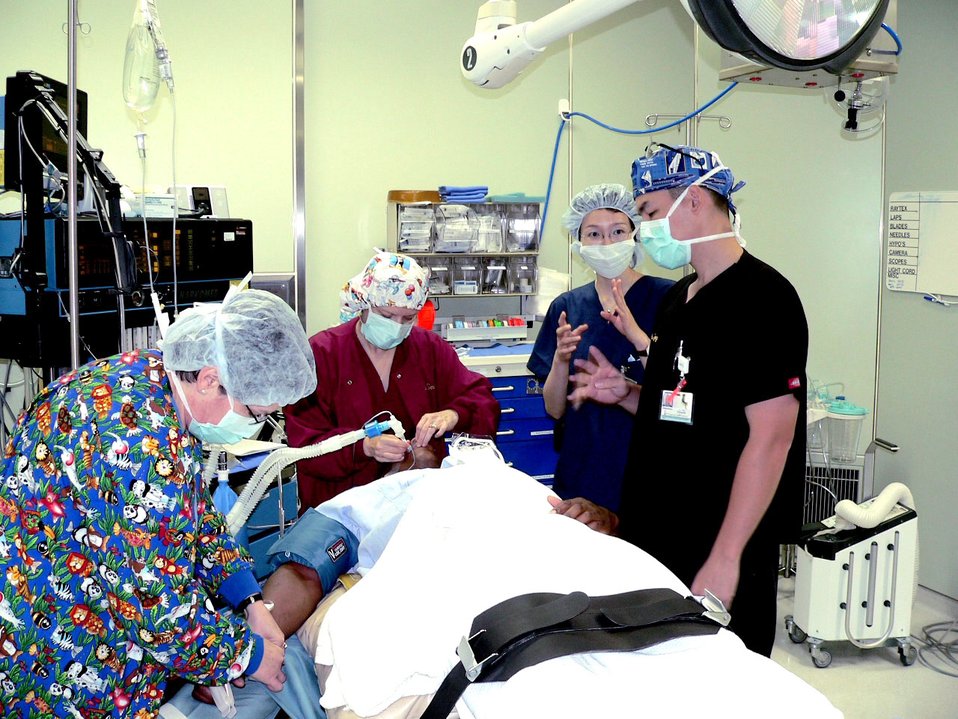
Internship promotes international relationship

Chihiro Nakazawa, a fifth-year medical student at Hirosaki University School of Medicine in Aomori prefecture, asks questions while observing base medical staff prepare a patient for surgery at Misawa Air Base, Japan.